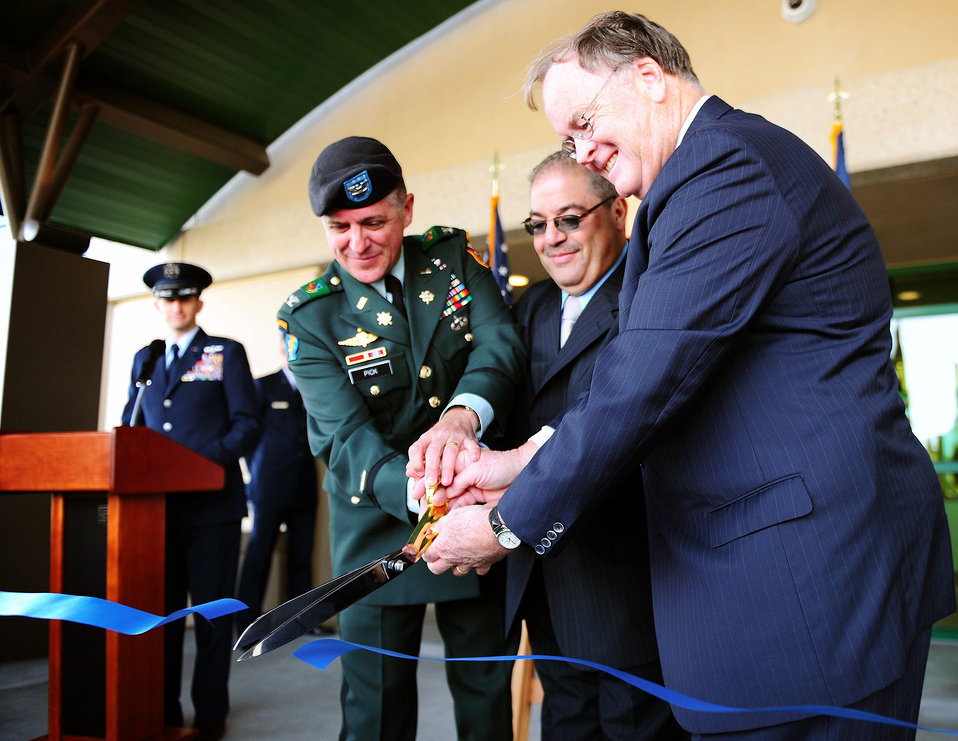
Dedication for Corps-built building at Monterey

(From left) Defense Language Institute Foreign Language Center Commandant Col. Danial D. Pick, Hany Khalil and U.S. Representative Sam Farr cut the ribbon to celebrate the dedication of Khalil Hall, named after Alfie T. Khalil, Hany’s brother. More than 150 people attended a ribbon-cutting ceremony for the new $28 million Alfie Khalil General Instruction Building held at the Presidio of Monterey, Calif., March 4.

The facility – built by the U.S. Army Corps of Engineers Sacramento District – is named after Alfie Khalil, an Arabic language instructor at the Defense Language Institute Foreign Language Center for 27 years and president of the American Federation of Government Employees from 1989 until his death in 2006. Twenty members of Khalil’s family, including his brother Hany, attended the ceremony.

Speaking of Khalil, Congressman Farr said: “People knew that languages were taught here, but they didn’t know the people who taught those languages. Alfie opened that door. He did it through his union work, by upgrading the respect for teachers and making them professional in the eyes of the law and in the ability to get pay.”